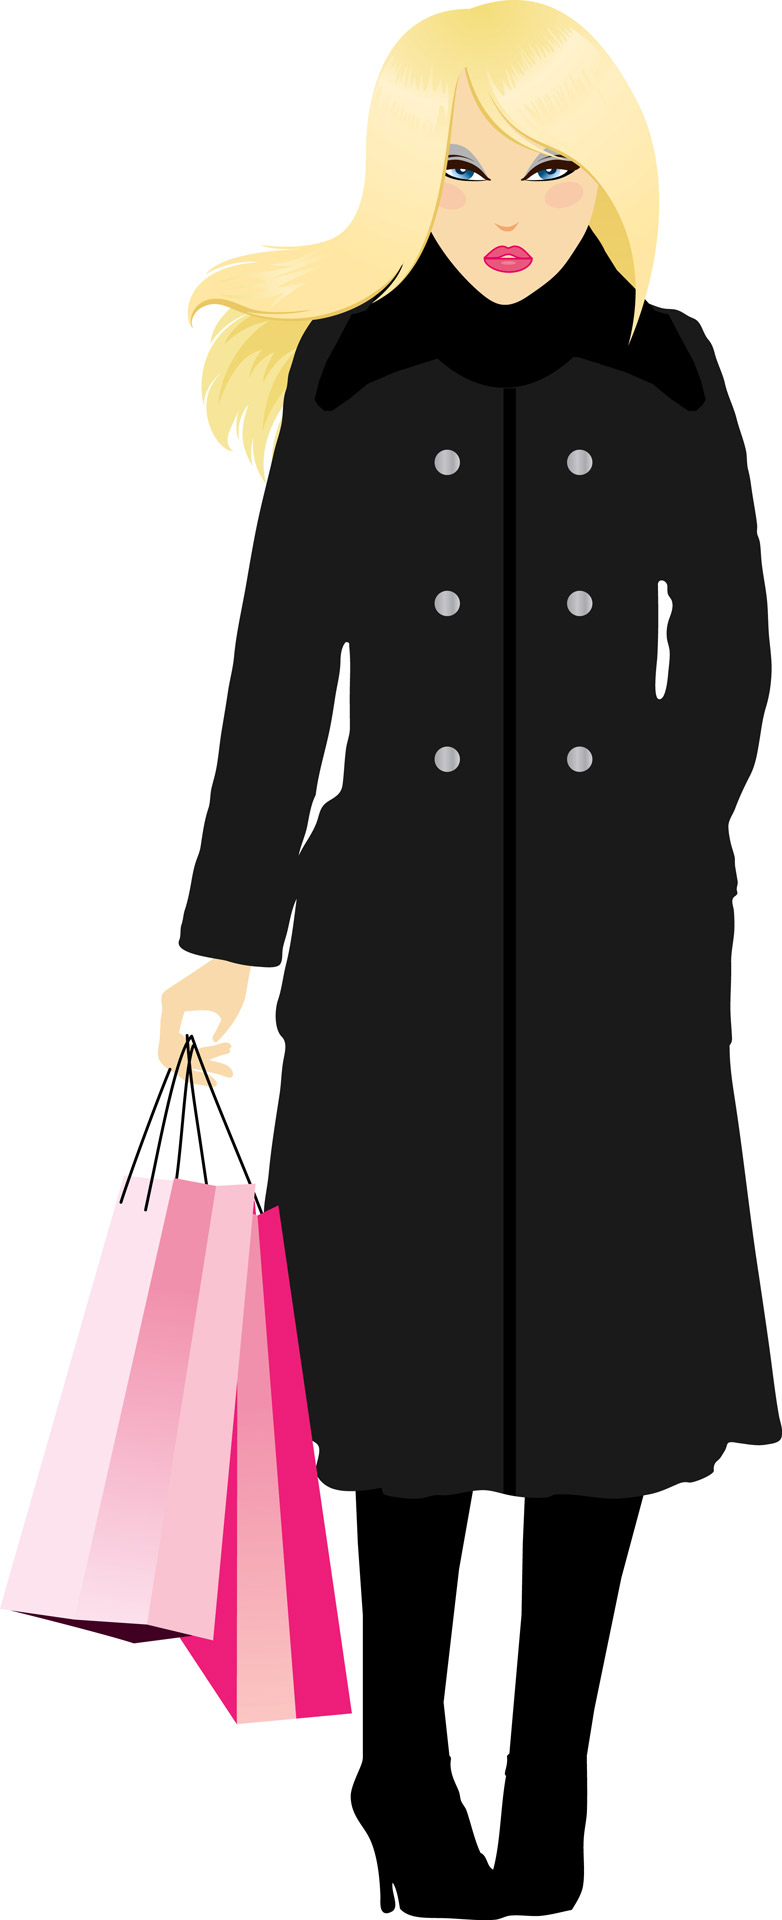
Woman shopping

Girl shopping clip-art.